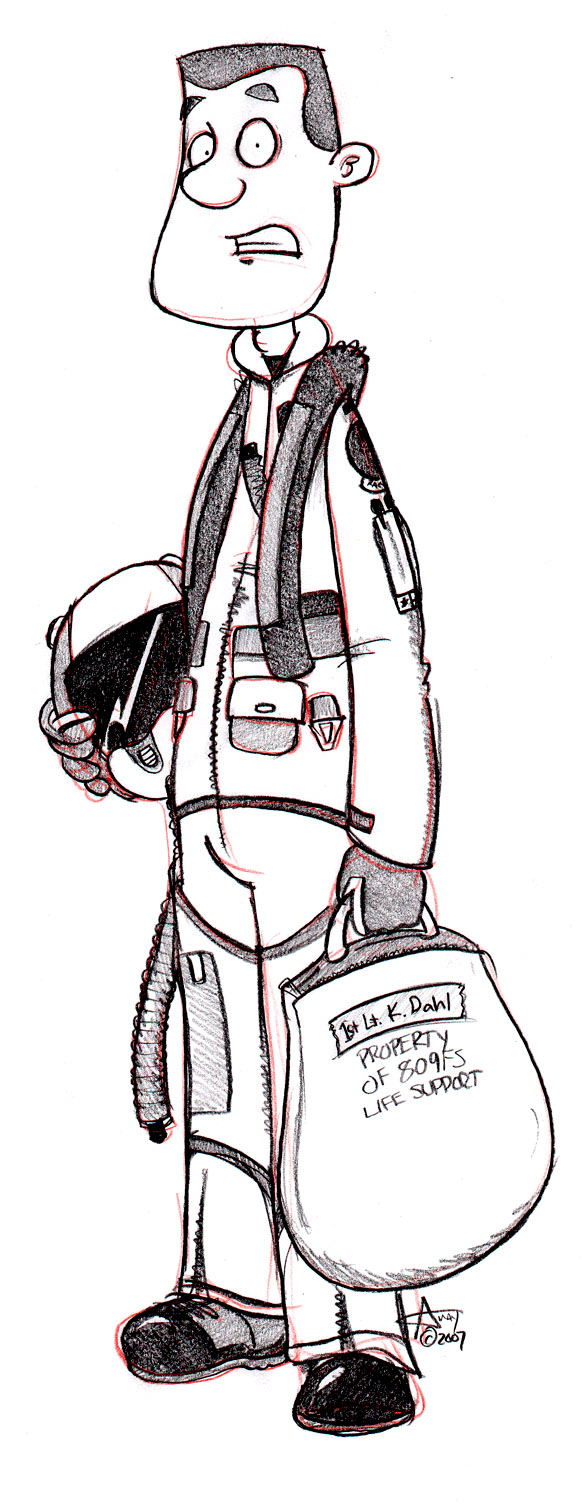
Air Force cartoonist publishes book while deployed

Character 1st Lt. Kenneth Dahl, call sign